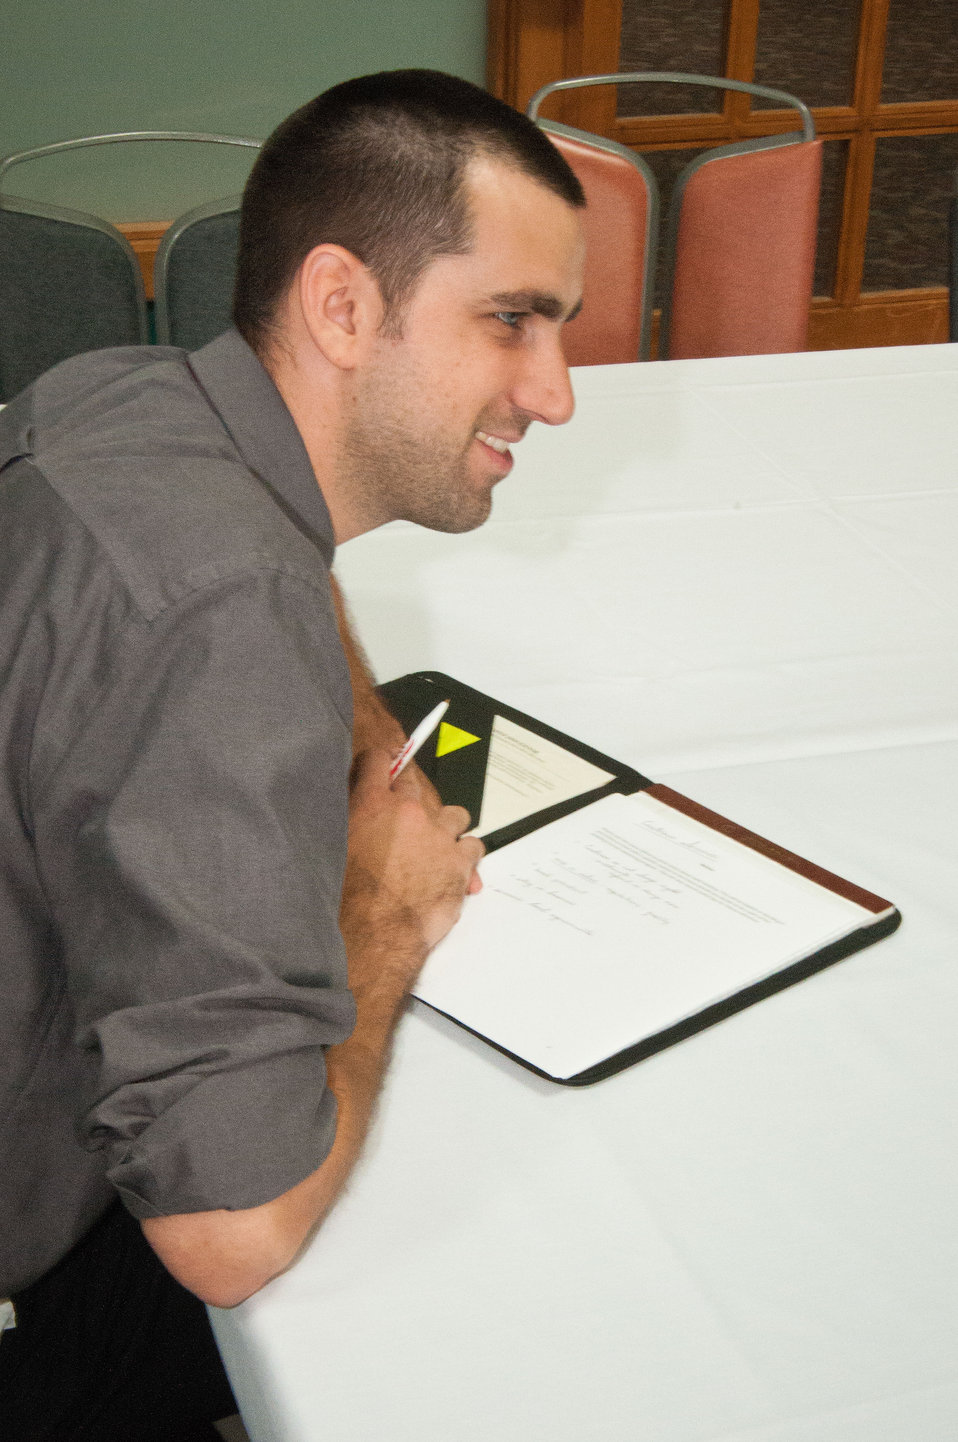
Theodore Dougenik listens and takes notes during a discussion on “Customer Service” at USDA’s Office of Human Resources Management (OHRM) Virtual University’s Fall Flash Mentoring Event at USDA in Washington, D.C. on Thursday, Sept. 6, 2012 in Washington, DC.